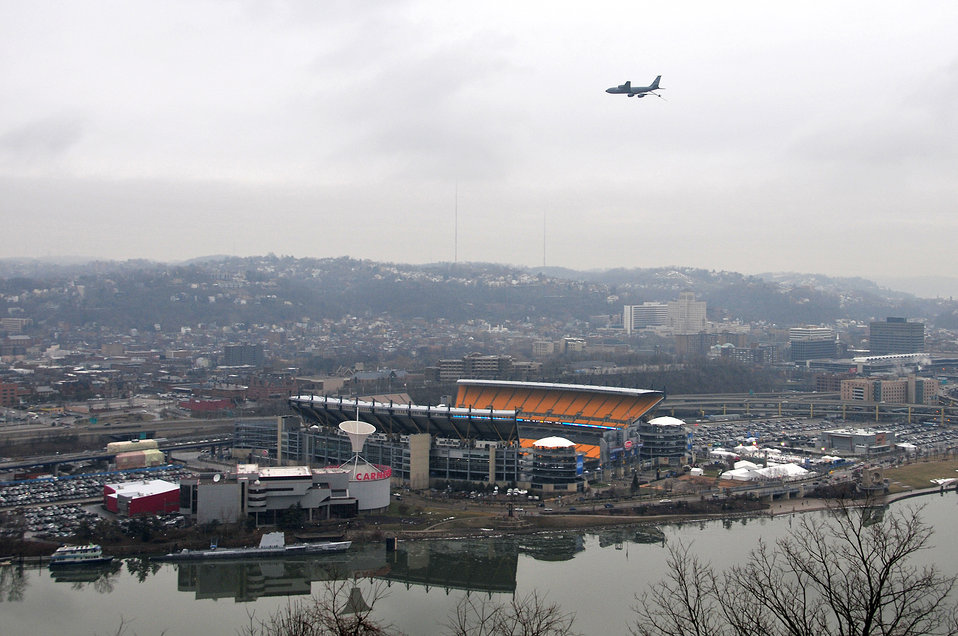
A workhorse for the bruisers

A KC-135 Stratotanker from the Pennsylvania Air National Guard's 171st Air Refueling Wing practices flying over Heinz Field, Dec. 30, 2010, for the National Hockey League's Bridgestone Winter Classic in Pittsburgh. The outdoor event was played Jan. 1, 2011, on the home field of the Pittsburgh Steelers.